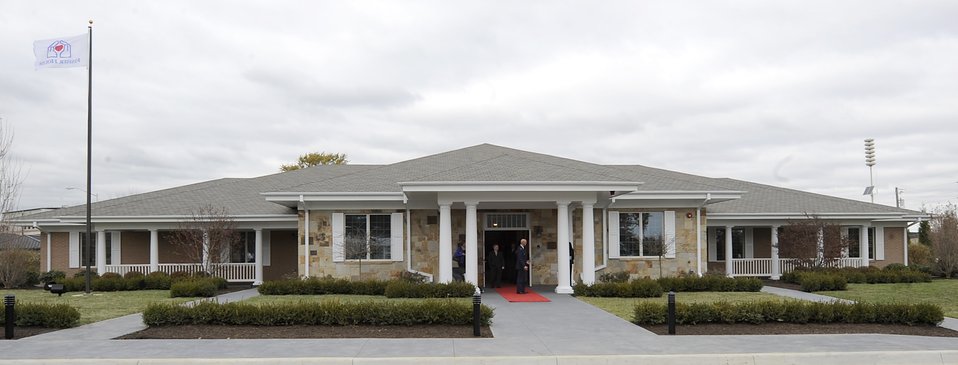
Dover AFB Fisher House Dedication

The 50th and newest Fisher House, the Fisher House for Families of the Fallen, at Dover Air Force Base, Del., was dedicated Nov. 10, 2010. This house is the first from the Fisher Foundation which not only will serve families of military personnel and veterans who are hospitalized, but also serve the Air Force Mortuary Affairs Operations mission, lodging families who travel to Dover AFB to witness the dignified transfer of their loved one.